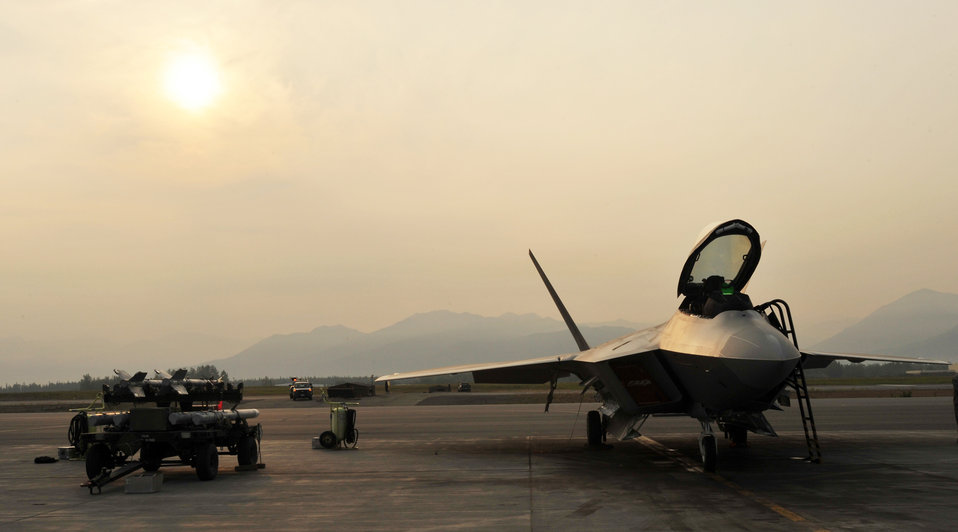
Smoking hot Raptor

Through a smoky haze, the sun beams down on an F-22 Raptor July 10 on the flightline at Elmendorf Air Force Base, Alaska. A hot and dry summer has led to more than 70 Alaskan wildfires across the state.